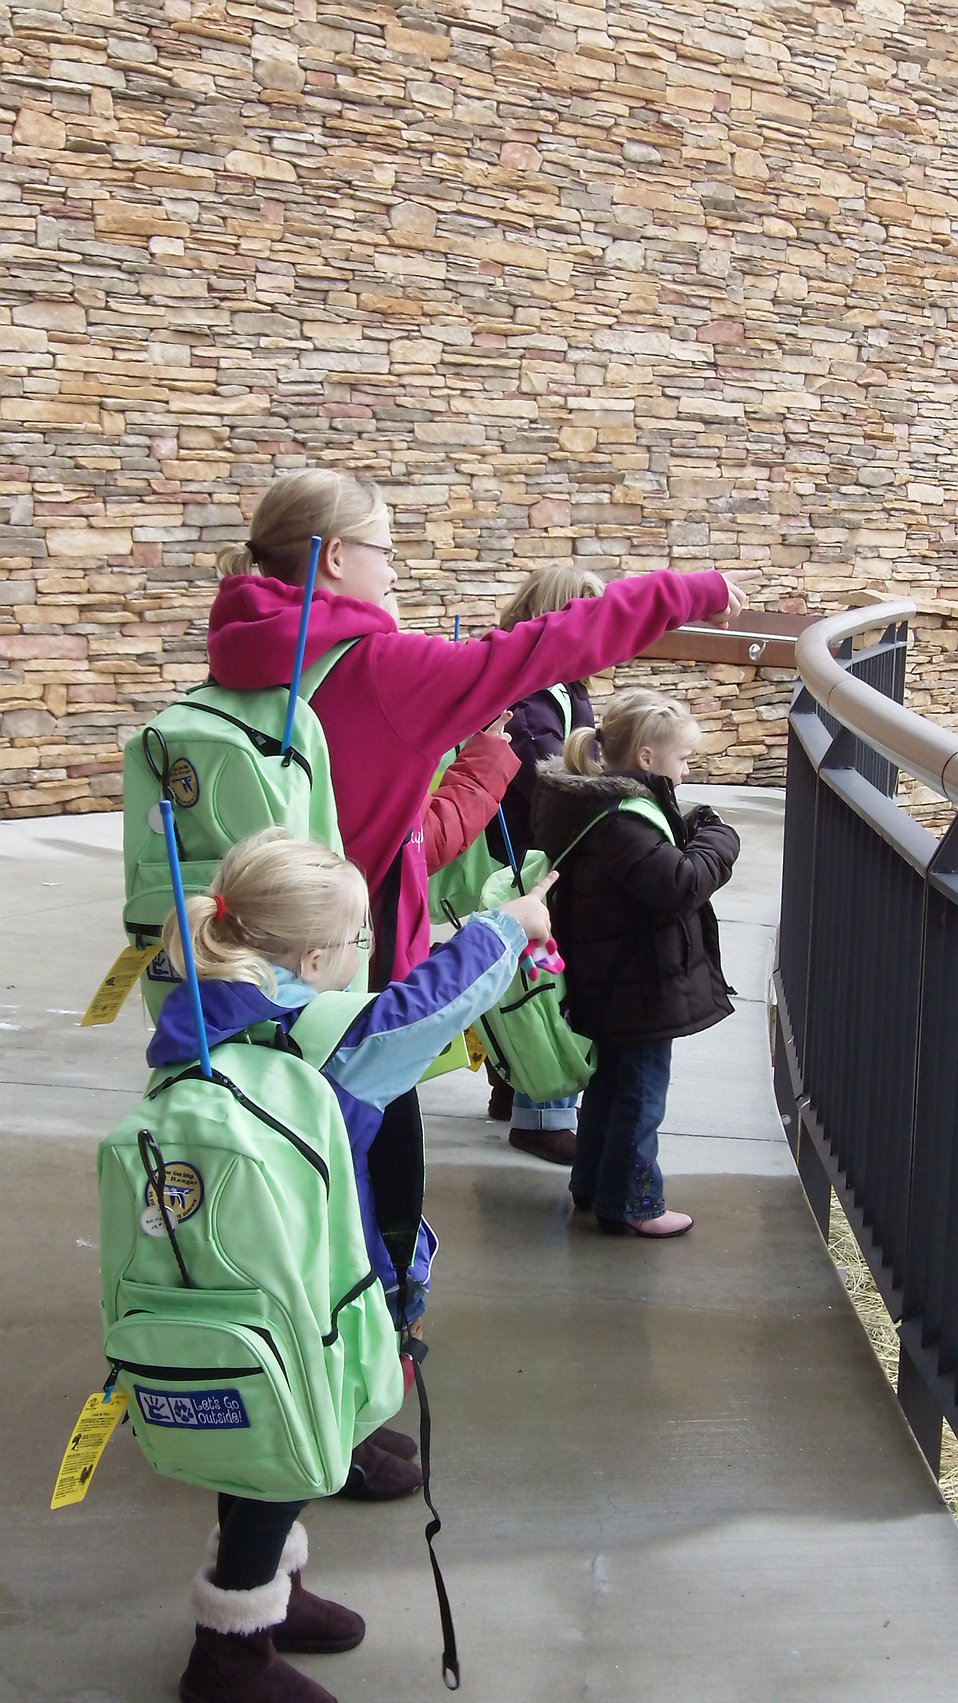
Jr. Ranger Packs from Bear River Migratory Bird Refuge

The Talbot girls receive Jr. Ranger Activity backpacks while on a visit to the Bear River Migratory Bird Refuge in Utah.